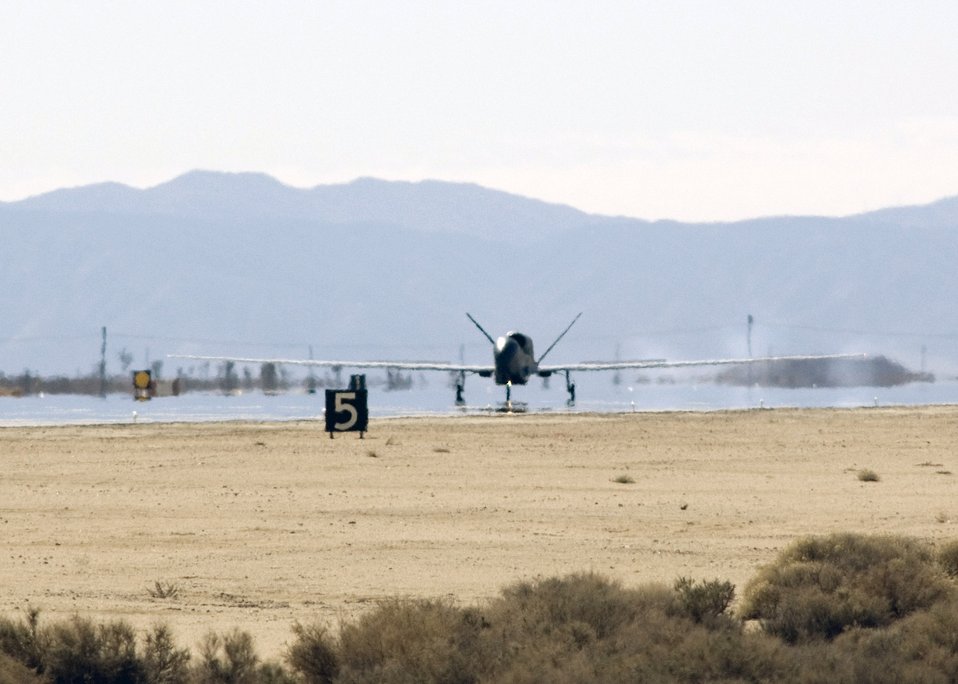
Global Hawk marks 10-year anniversary

The Global Hawk unmanned aerial vehicle lands after an eight-hour mission Feb. 28 at Edwards Air Force Base, Calif. The flight marked the 10th anniversary of the Global Hawk's first flight at Edwards AFB, where the aircraft flew for one hour and reached an altitude of 32,000 feet.